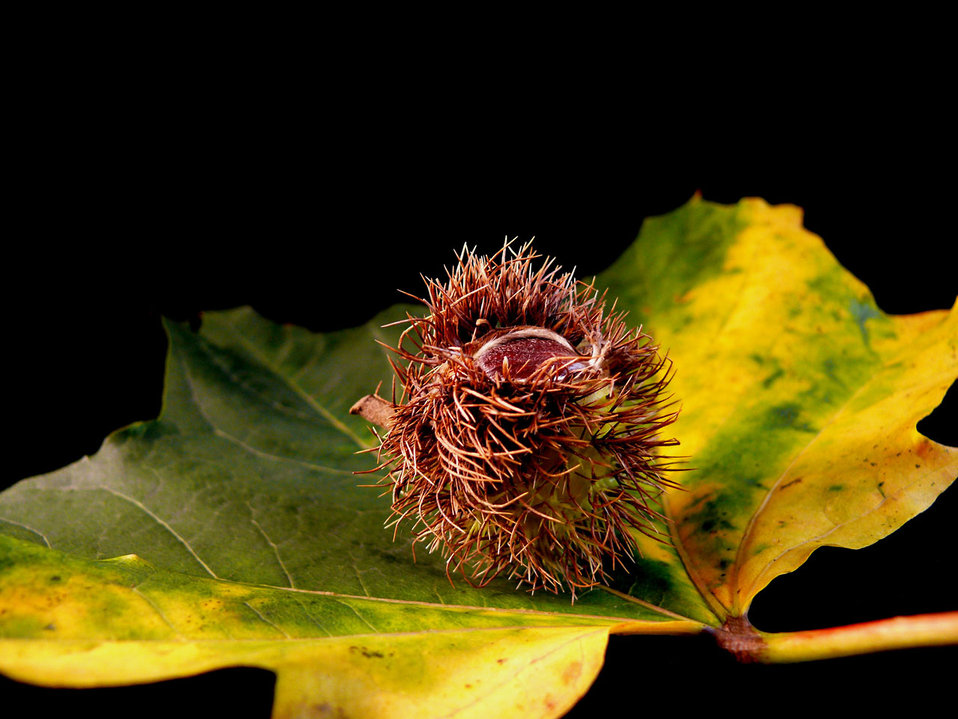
Autumn

Leaf on black backround.